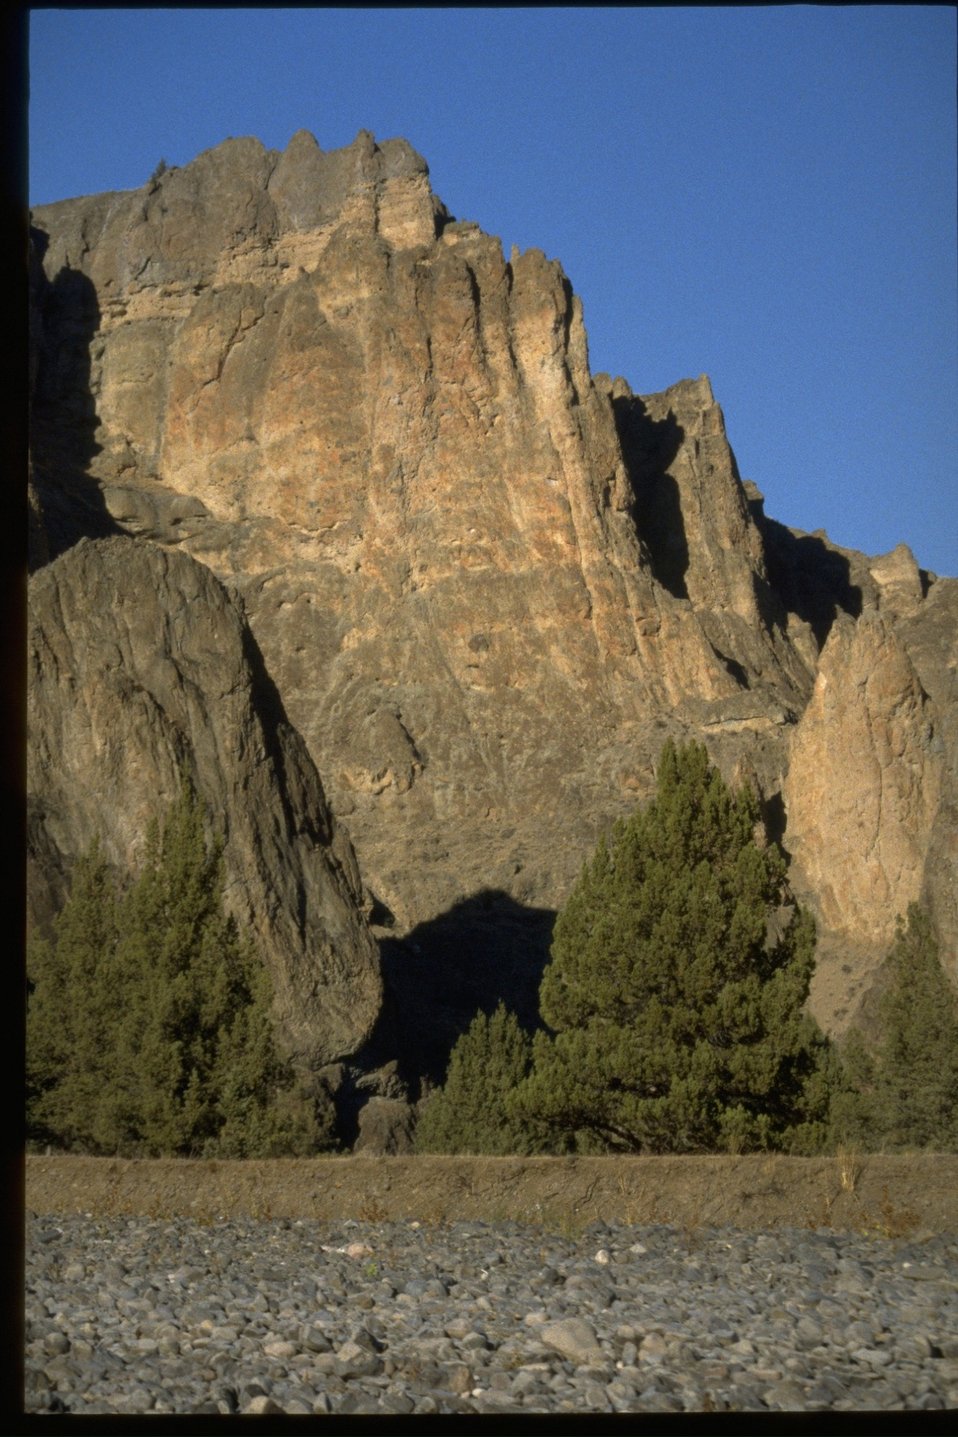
Juniper under scenic rock formation along the John Day River.